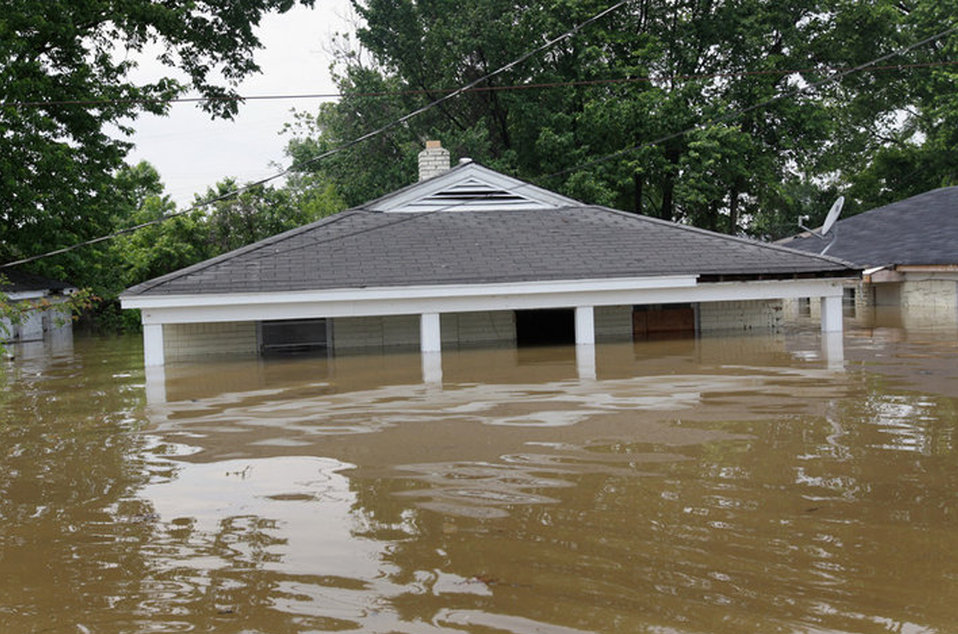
Arkansas Flood Photo of a House Under Water